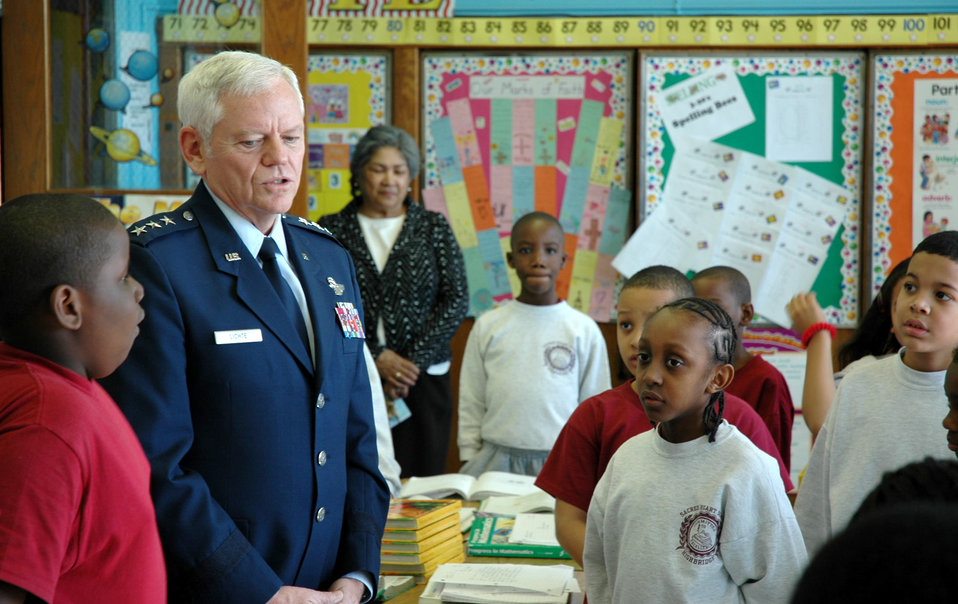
Visit to the old neighborhood

NEW YORK (AFPN) -- Lt. Gen. Arthur J. Lichte visits with students at Sacred Heart Grammar School here. General Lichte, the Air Force director of staff, visited his old neighborhood Feb. 9.